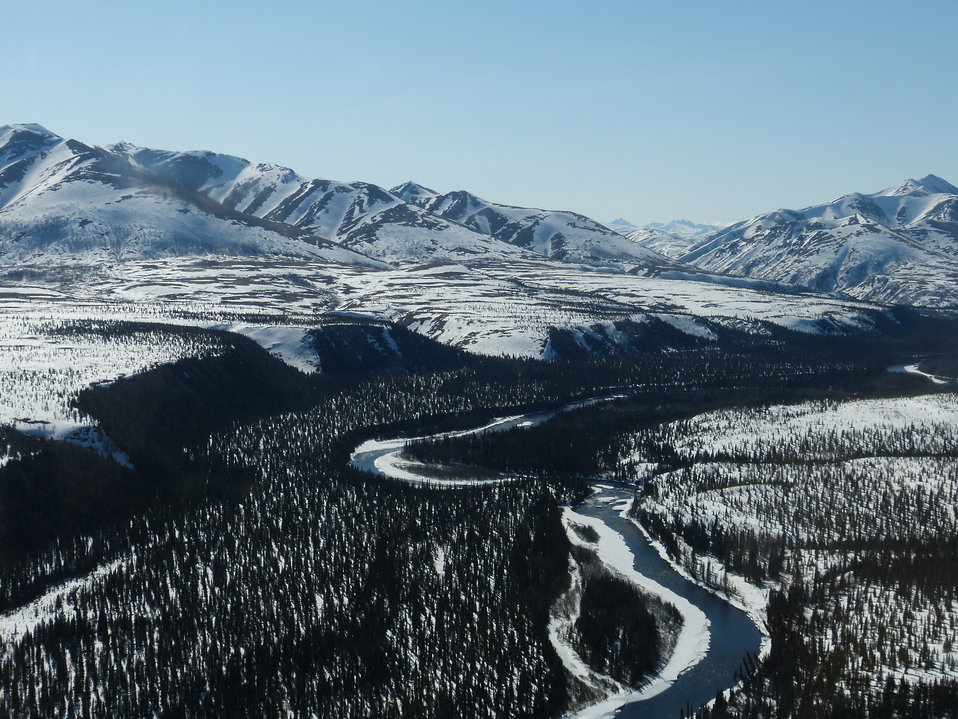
Kilbuck Mountains May2013 KSowl

Cliff-nesting raptor survey, Kilbuck Mountains, Yukon Delta National Wildlife Refuge

Photo credit: Kristine Sowl,
USFWS, YDNWR